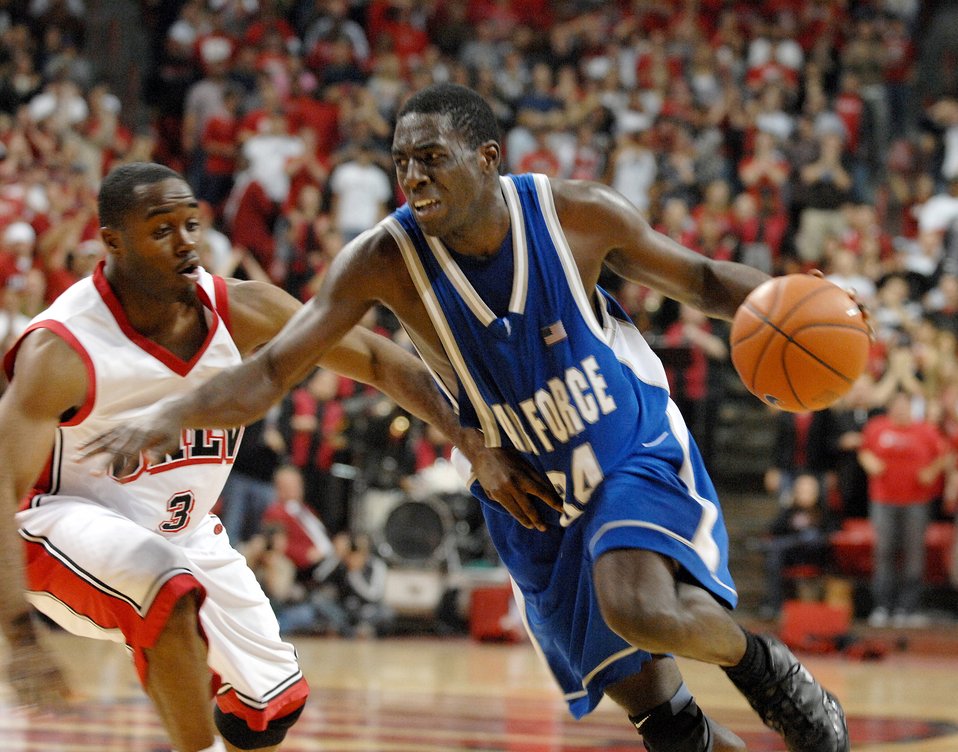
Make your move

Dan Nwaelele drives past Lamar Roberson during a game between the University of Nevada Las Vegas and the U.S. Air Force Academy Feb. 20 at the Thomas and Mack Center in Las Vegas. UNLV won the game by a score of 60 to 50.